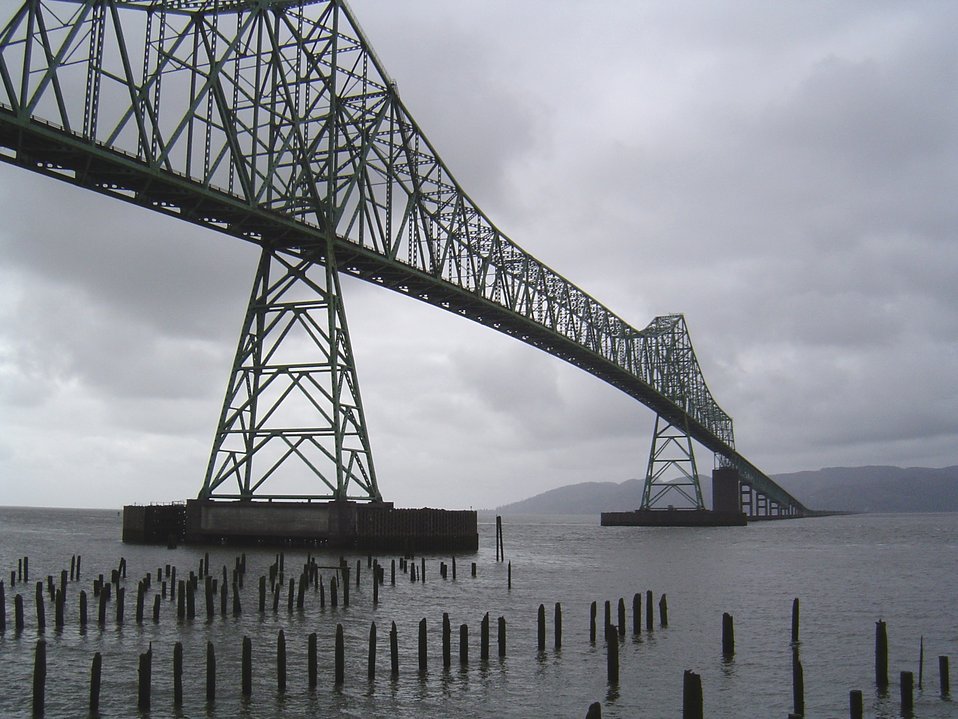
Astoria-Megler Bridge stretching from Astoria, Oregon, to Point Ellice, Washington. It stretches 4.1 miles and its center span is 1,232 feet in length, the longest 'contuous truss' in the world.